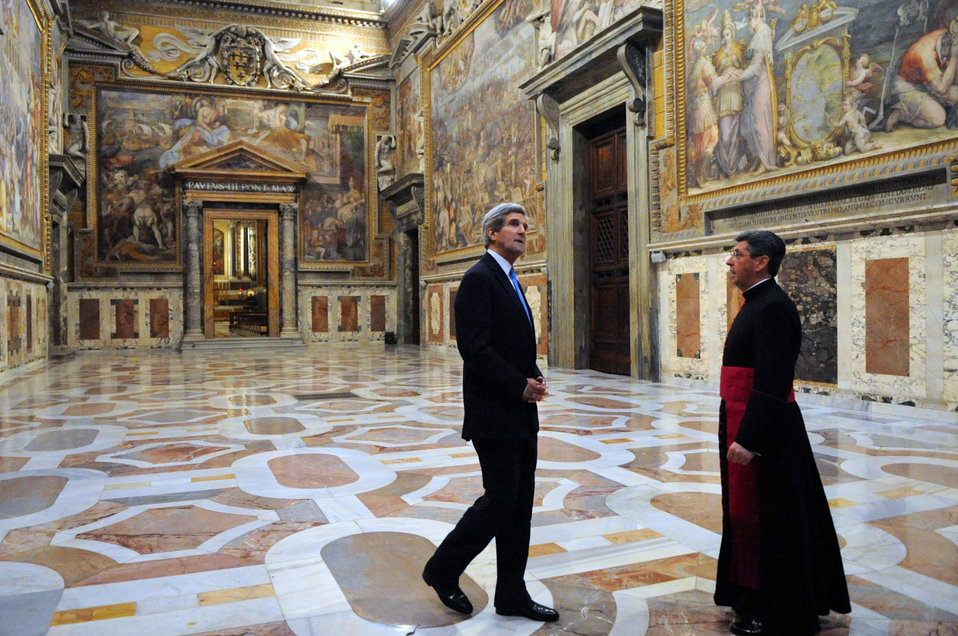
Secretary Kerry Receives a Tour of the Vatican from the Vatican Protocol Chief

U.S. Secretary of State John Kerry gets a tour of the Vatican from Chief of Protocol Monsignor Jose Bettancourt during a visit to Vatican City and Rome, Italy, on January 14, 2014.